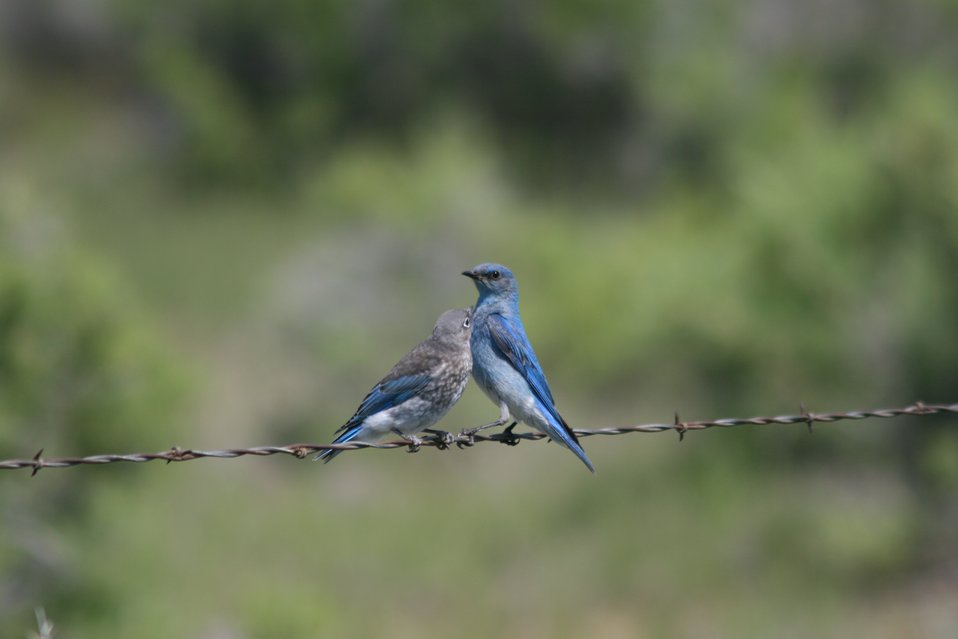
Mountain Bluebirds

A pair of mountain bluebirds rest on a fence line. The efforts of the joint venture partners are creating large connected natural areas that benefit countless species of fish and wildlife.